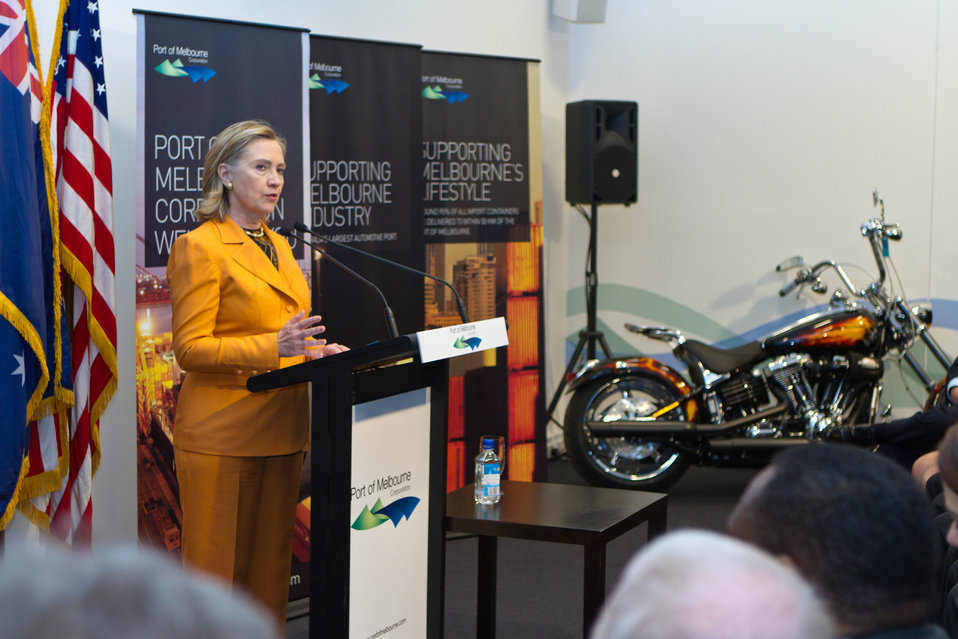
Secretary Clinton Delivers Remarks at a U.S. Trade Event

U.S. Secretary of State Hillary Rodham Clinton delivers remarks at a U.S. trade promotion event at the Port of Melbourne in Australia, on November 7, 2010.